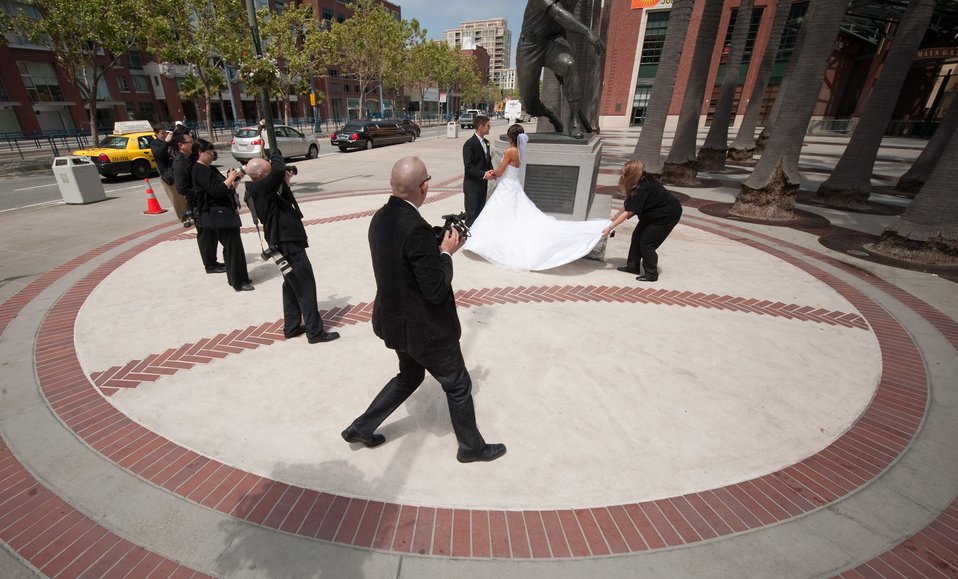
San Francisco Dream Wedding

Vanessa Muza Teskey and Capt. Mike Hawkins (at statue) were brought to the AT&T Park baseball stadium for some of their wedding photos in San Francisco May 14, 2010. Amy Frugoli (right), wedding planner, makes some adjustments to the wedding dress before the multimedia team of James Burkart (left-right), Andrew Hsu, and Lilia and Raymond Ahner begin shooting at one of several photo locations. The wedding couple won the San Francisco Dream Wedding Giveaway with viewer votes. Mrs. Hawkins has been diagnosed with stage IV Hodgkin's lymphoma. Vendors donated $100,000 of goods and services to the couple's wedding day.